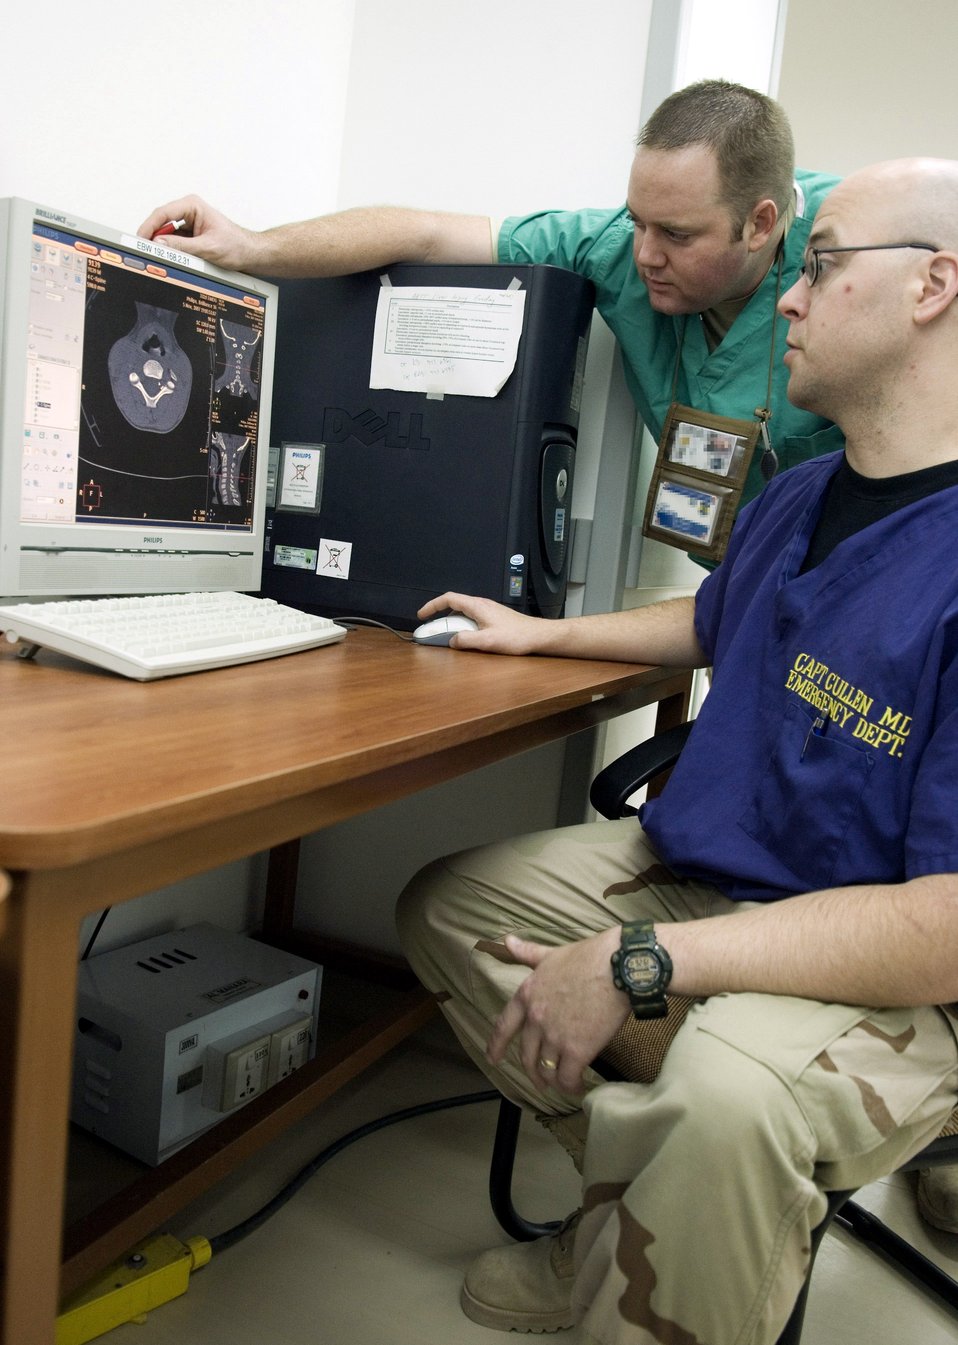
Balad radiologists scan to save lives

Capt. (Dr.) Shawn Cullen reviews the neck portion of a CT scan made on a Iraqi child with Capt. Thomas Folsom to check for any abnormalities or factures in the Air Force Theater Hospital at Balad Air Base, Iraq. Captain Cullen is an emergency room doctor with the 332nd Expeditionary Medical Squadron and is deployed from Keesler Air Force Base, Miss., and Captain Folsom is a 332nd EMDG emergency room nurse deployed from Patrick AFB, Fla.